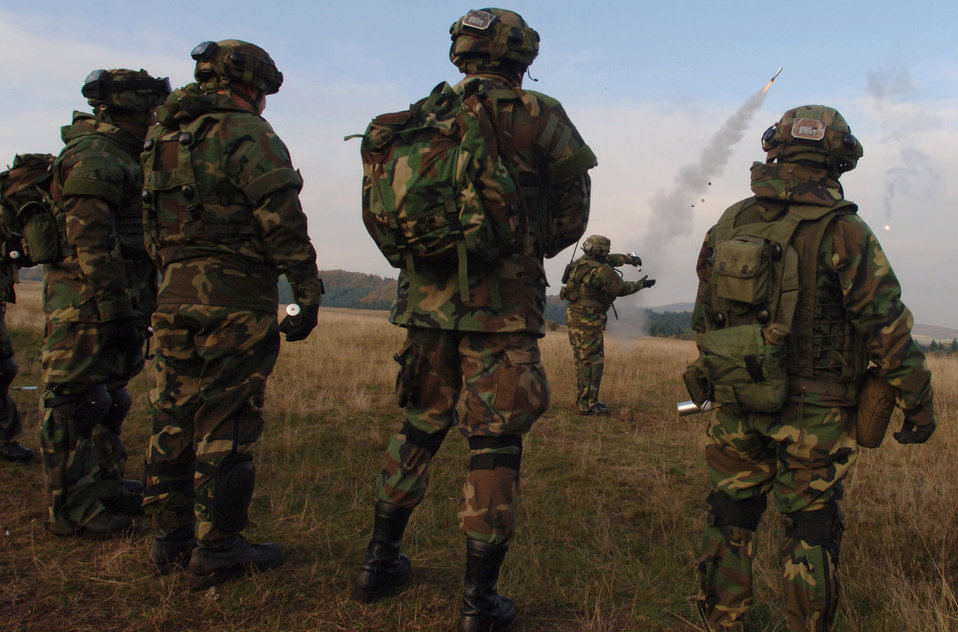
Creek Defender

Security Forces Airmen line up Oct. 23 to fire an M-127 slap flare. They are taking part in a two-week pre-deployment base defense course known as Creek Defender at Baumholder U.S. Army Garrison in southern Germany. The flare is used for signaling and illuminating open areas in low-light conditions.